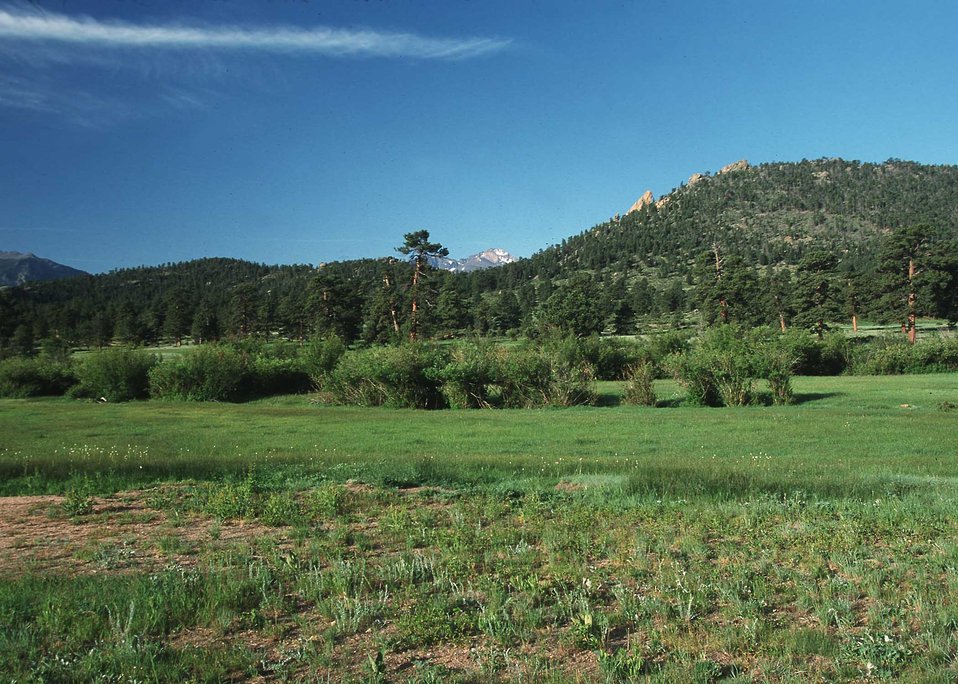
Elk Hedged willow, McGregor Ranch, RMNP.